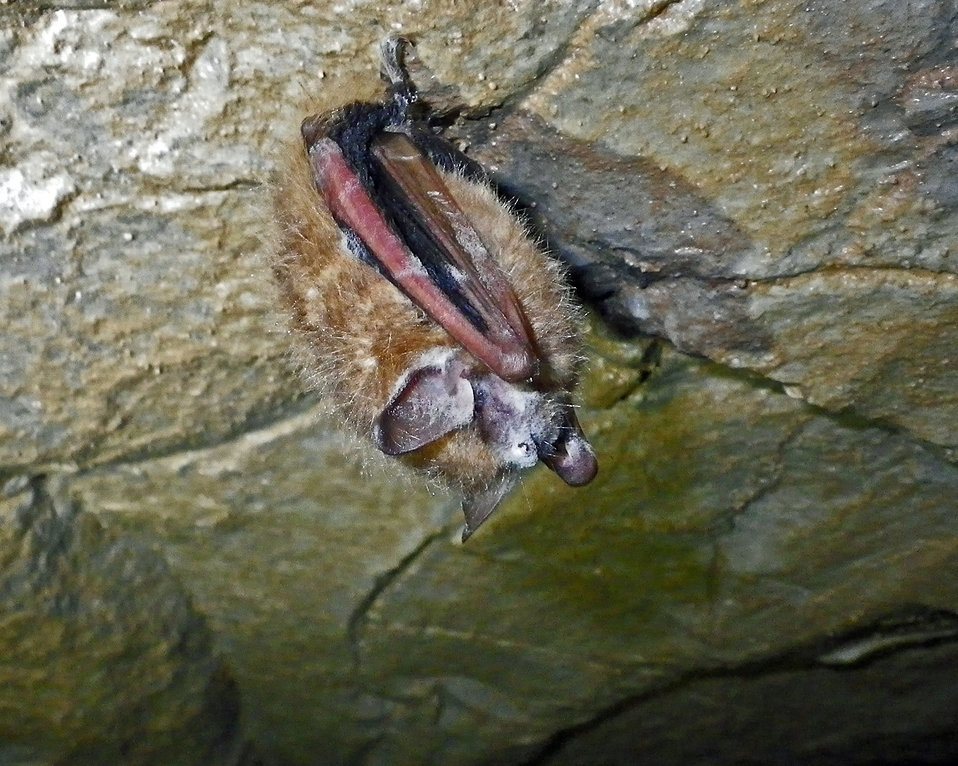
Infected tri-colored bat in

Infected tri-colored bat (Perimyotis subflavus) in Jackson County, Alabama cave